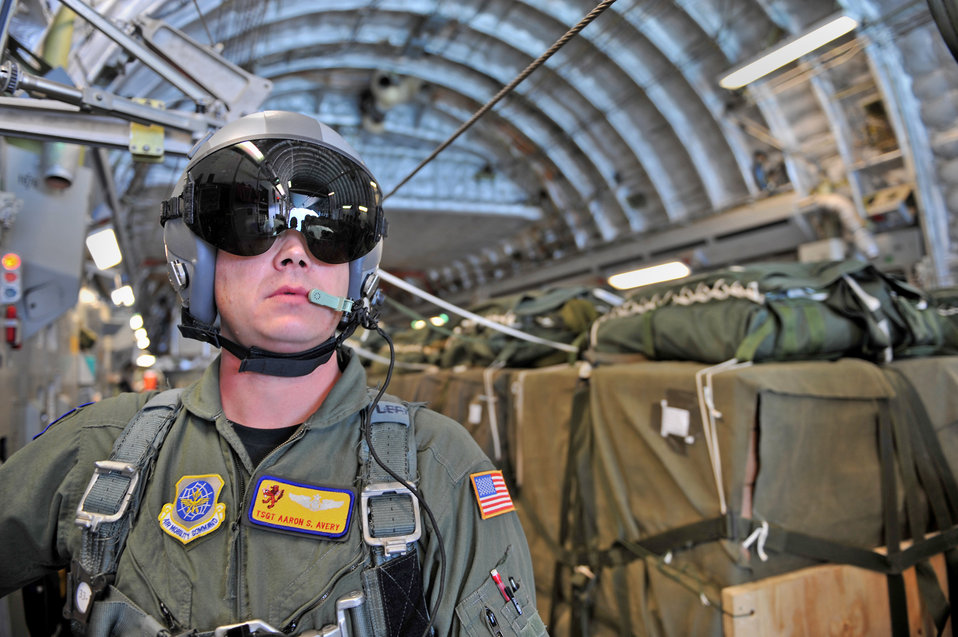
Operation Unified Response

Tech. Sgt. Aaron Avery prepares to release pallets of relief supplies from a C-17 Globemaster III cargo aircraft for a humanitarian air delivery over Haiti Jan. 18, 2010. The C-17 and crew conducted the first humanitarian air delivery flown in support of Operation Unified Response, sending more than 69,000 pounds of supplies into Haiti. Sergeant Avery is a loadmaster from the 16th Airlift Squadron at Charleston Air Force Base, S.C.